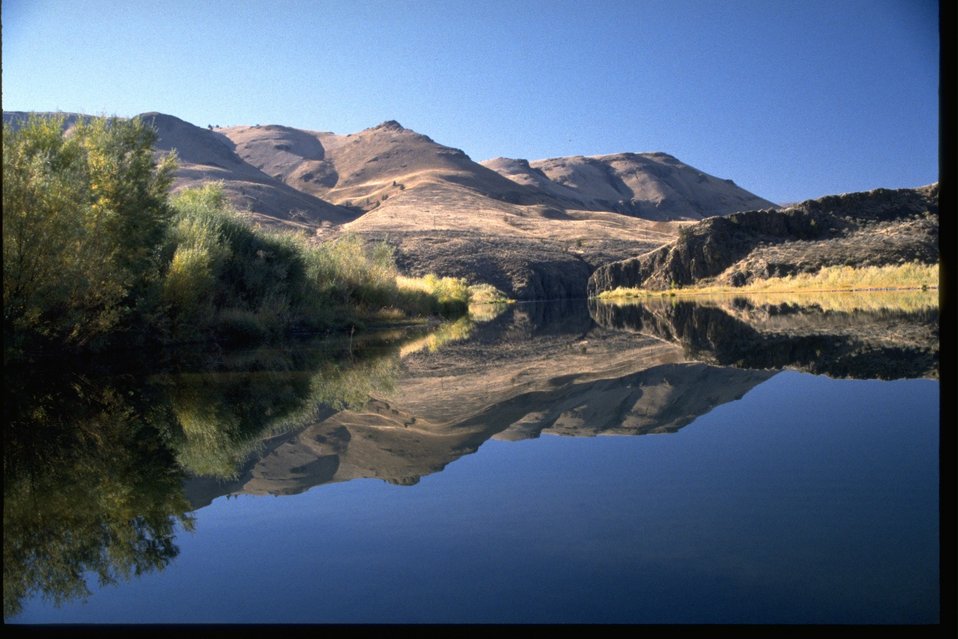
Riparian vegetation along the bank of the John Day River, near Bridge Creek.